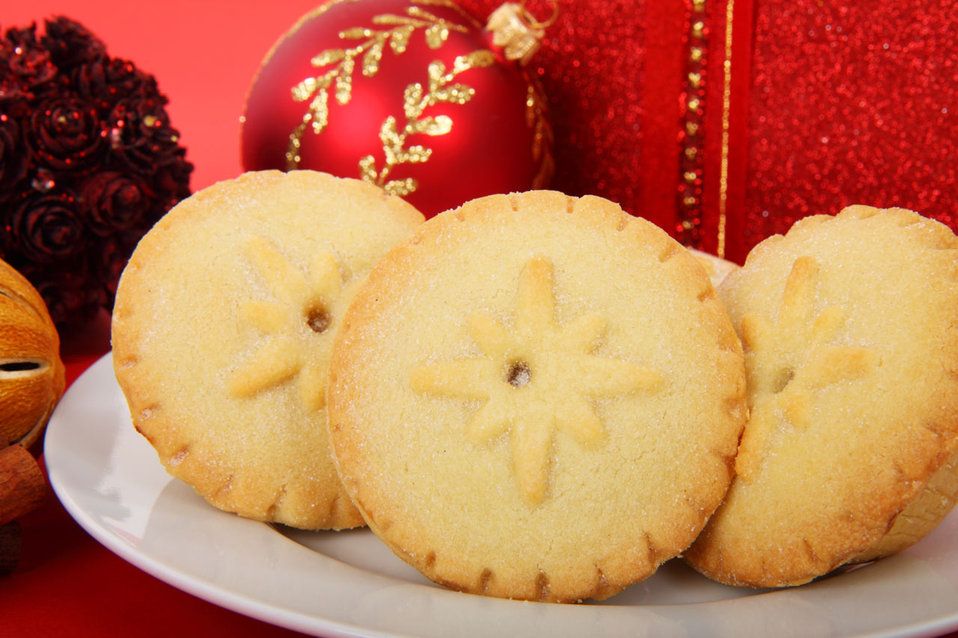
Mince pies on plate

Christmas mince pies on plate with red decoration.